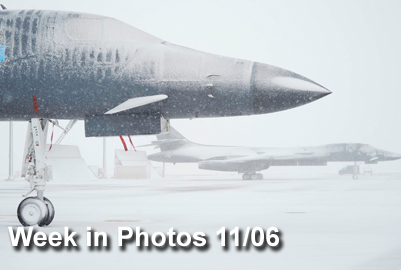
Week in Photos

Air Force Week in Photos for Nov. 6 highlights photos from around the Air Force. In this photo by Airman 1st Class Corey Hook, the first big snowfall of the winter season collects on B-1B Lancers at the Ellsworth Air Force Base, S.D., flightline Oct. 29, 2009.